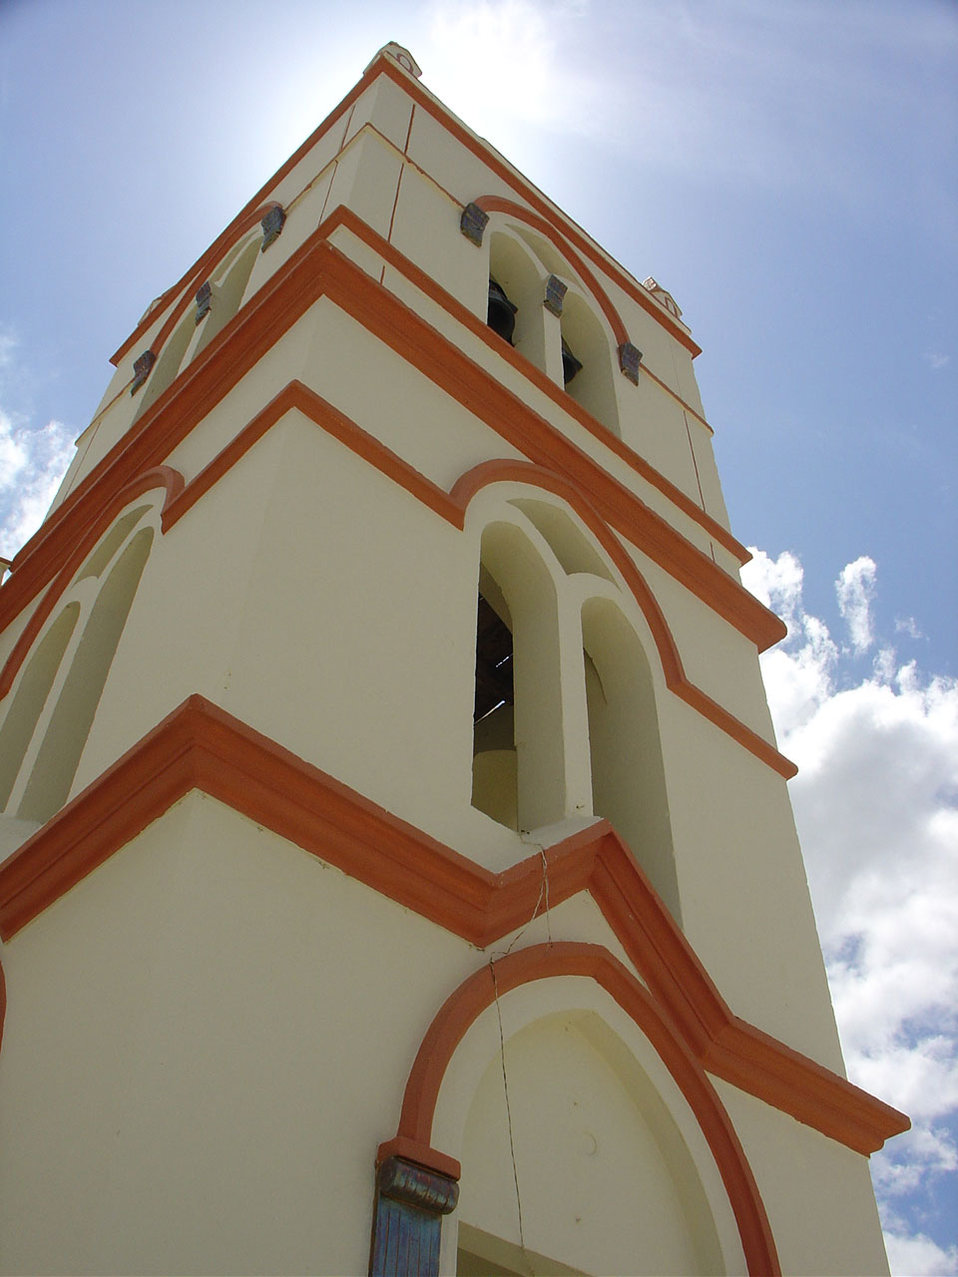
Church tower

Tower of the church of boqueirão, pe., brazil.